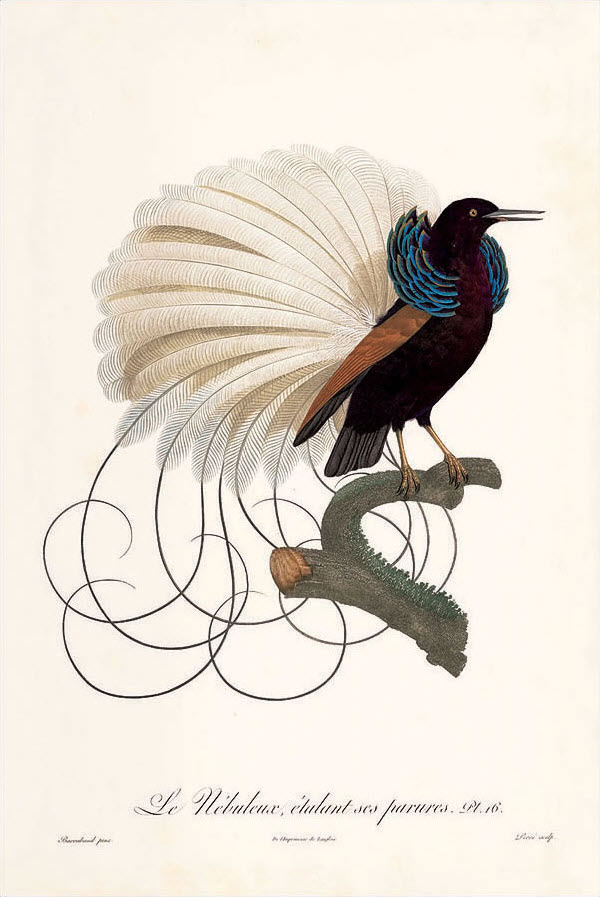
Le Nébuleux étalant ses parures, plate no. 16, from 'Histoire naturelle des Oiseaux de paradis et des Rolliers', published by Jacques Barraband and François Levaillant (original illustration in watercolor)